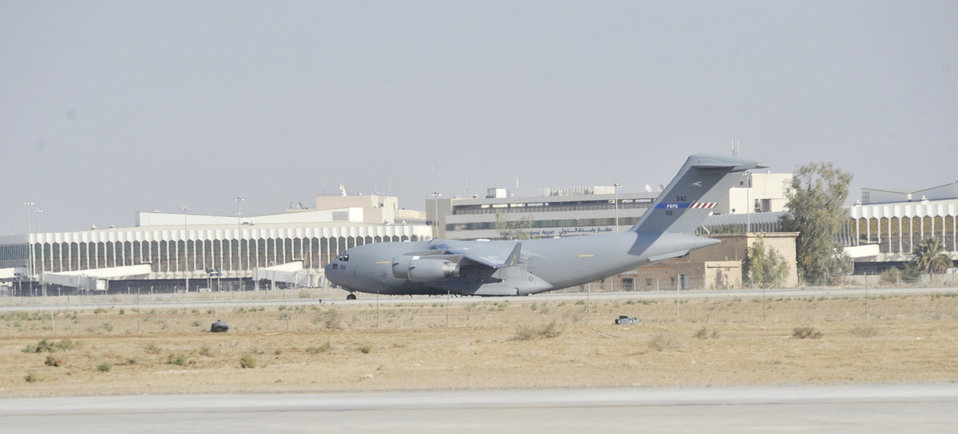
Multinational wing completes first mission into Iraq

A C-17 Globemaster III from the multinational Heavy Airlift Wing based at Papa Air Base, Hungary, taxis past the terminal at Baghdad International Airport, Iraq. The airlift into Iraq was a first by the wing and facilitated the deployment for members of the NATO Training Mission-Iraq. The wing operates three C-17s and includes NATO member nations Bulgaria, Estonia, Hungary, Lithuania, the Netherlands, Norway, Poland, Romania, Slovenia and the U.S., as well as Partnership for Peace nations Finland and Sweden.